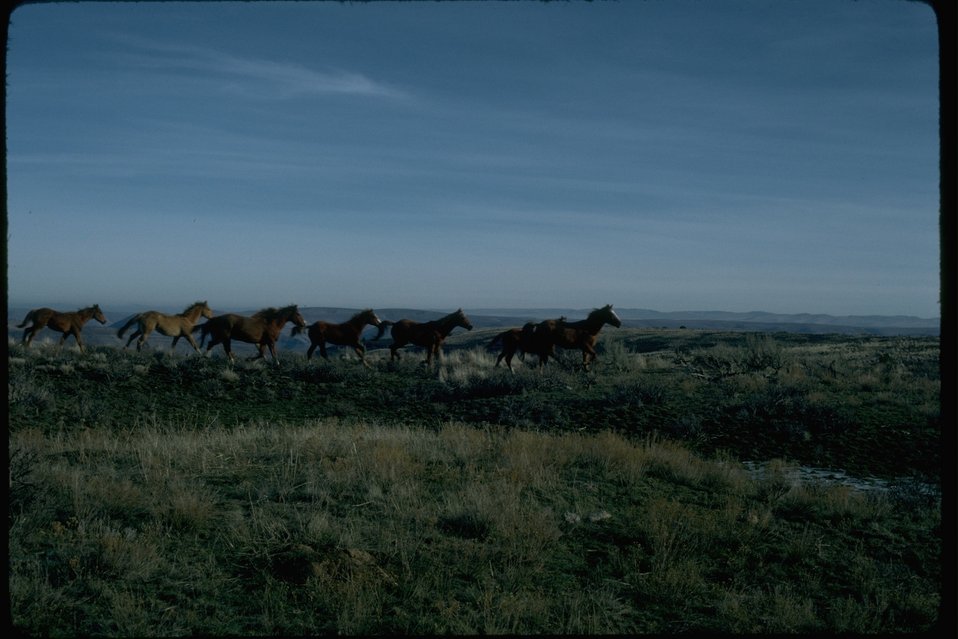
Wild horses along 30 Mile Creek in the 30 Mile Creek Wilderness Study Area. OR 5-1.